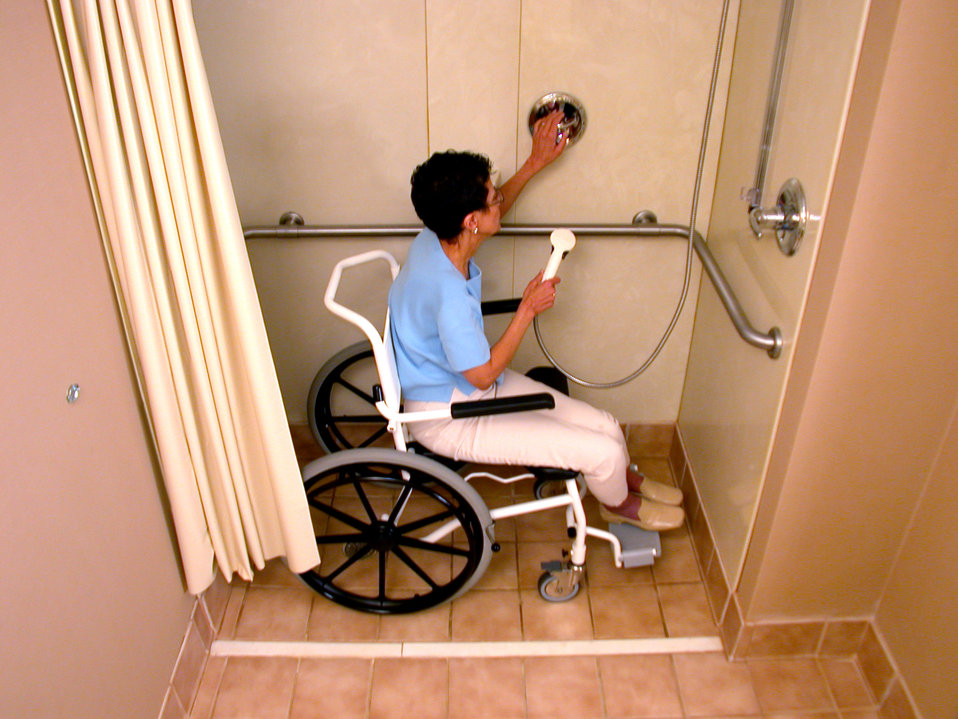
This 1995 image depicted a mobility-challenged woman who was sitting in a wheelchair in a medium-sized 'curbless' shower, as she was demonstrating the use of the sidewall-mounted diverter valve, while holding the large, push button hand held showerhead. The 3' x 5' shower stall was large enough to accommodate many uses while being small enough to fit in many bathrooms. Note that there were two design problems, which prevented it from being considered a 'universally' accommodating design: The shower curtain does not descend all the way to the floor, which would prevent water from escaping unto the outer floor; the mix valve was mounted too high. Use of term 'curbless' is extremely important, as opposed to 'roll-in' type of shower. By designing this restroom to accommodate those with mobility impairments, the overall design became even more accommodating to all, which was really the challenge, and the goal of a universally designed facility.